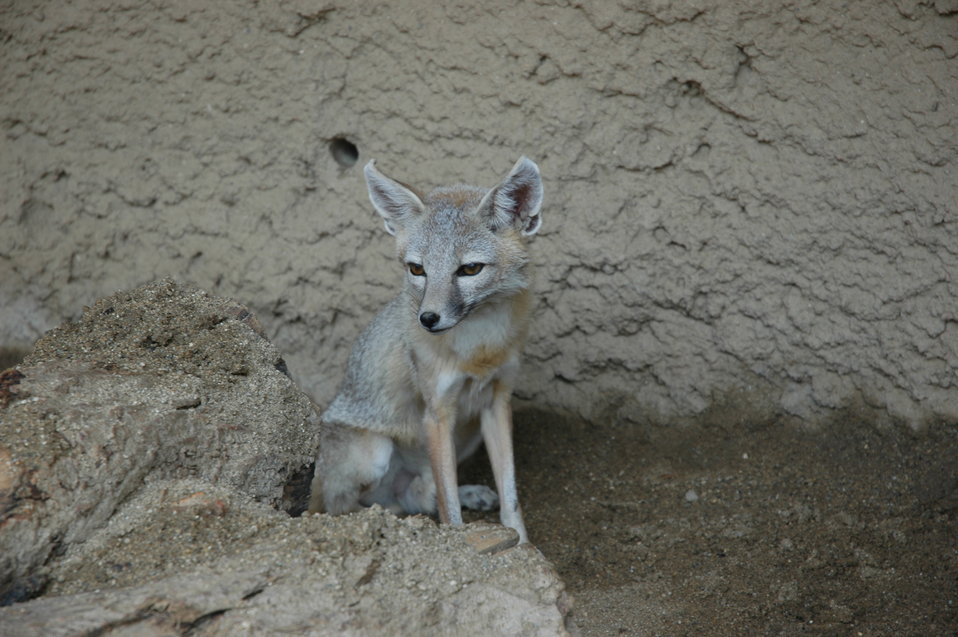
San Joaquin kit fox